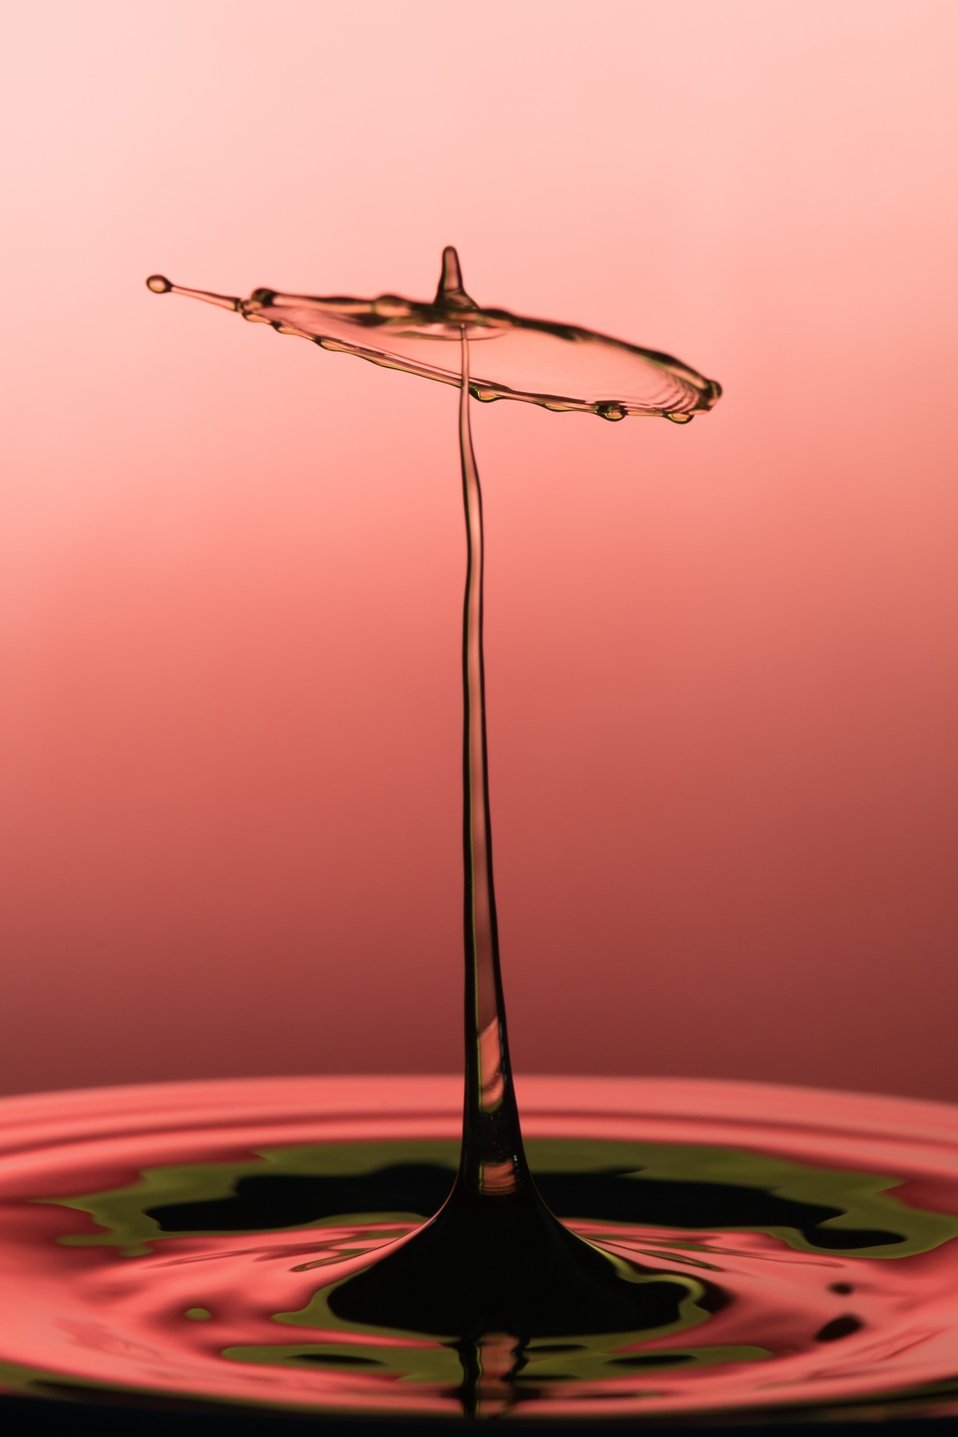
Water umbrella

Red umbrella out of the water.